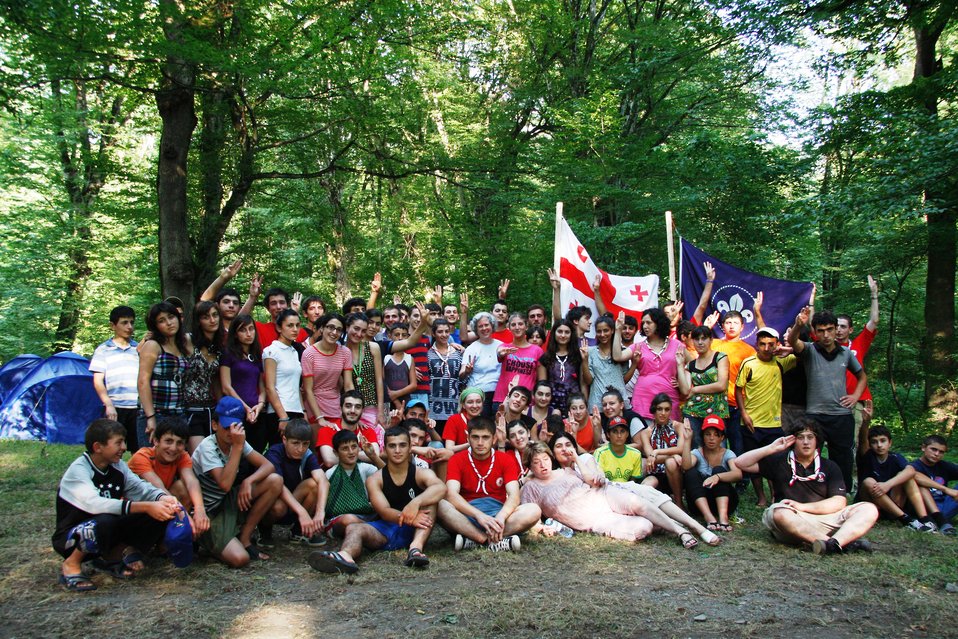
PAO Whittlesey Visits “Kingdom of Friendship” Summer Camp for IDP and Non-Displaced Children in Georgia

Public Affairs Officer Cynthia Whittlesey visits a U.S. Embassy Tbilisi-funded summer camp, “Kingdom of Friendship,” designed for both IDP and non-displaced children in Lagodekhi National Park in Georgia on July 18, 2010.